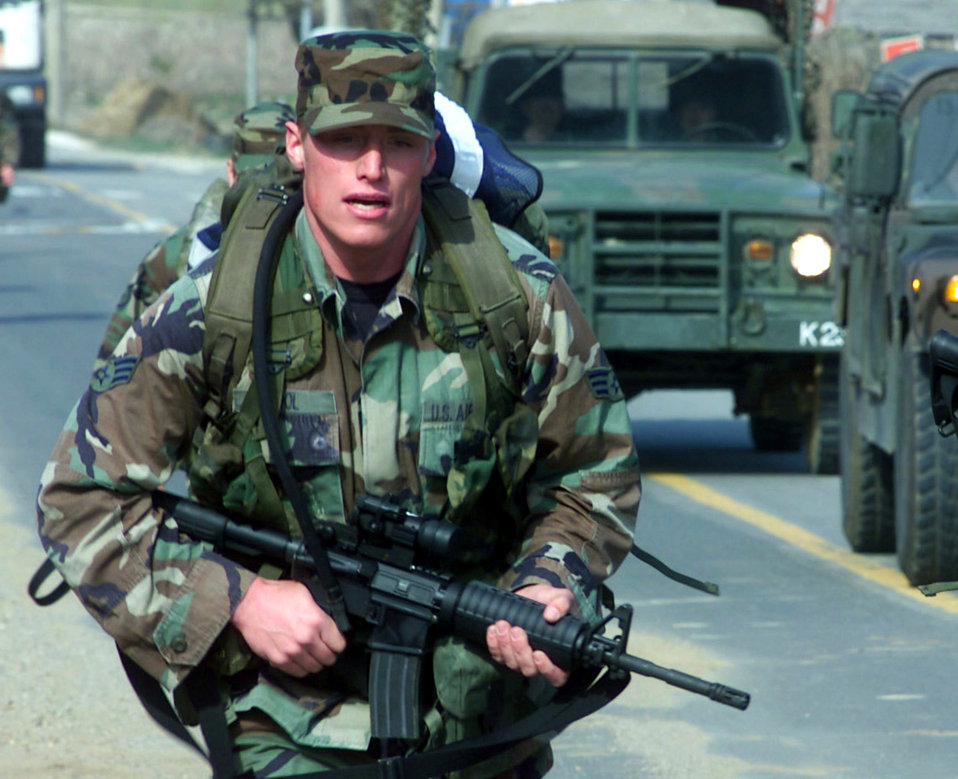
Tiger tales

TWIN BRIDGES TRAINING AREA, South Korea -- Senior Airman Ben Pool completes the 10-mile rucksack march during Tiger Challenge 2004 here April 7. The weeklong annual competition tests tactical air control and command technicians on their navigation skills, job knowledge, physical endurance and marksmanship. Airman Pool is assigned to the 604th Air Support Operations Squadron at Camp Red Cloud, South Korea.